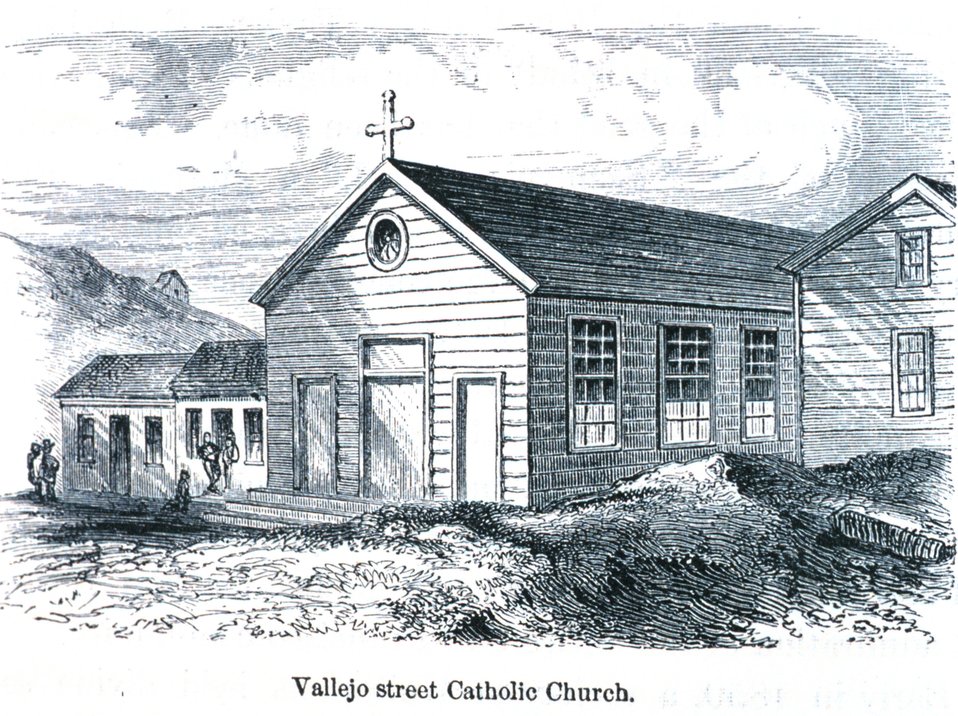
The Vallejo Street Catholic Church. In: 'The Annals of San Francisco'. Frank Soule, John Gihon, and James Nesbit. 1855. Page 696. D. Appleton & Company, New York. F869.S3.S7 1855.